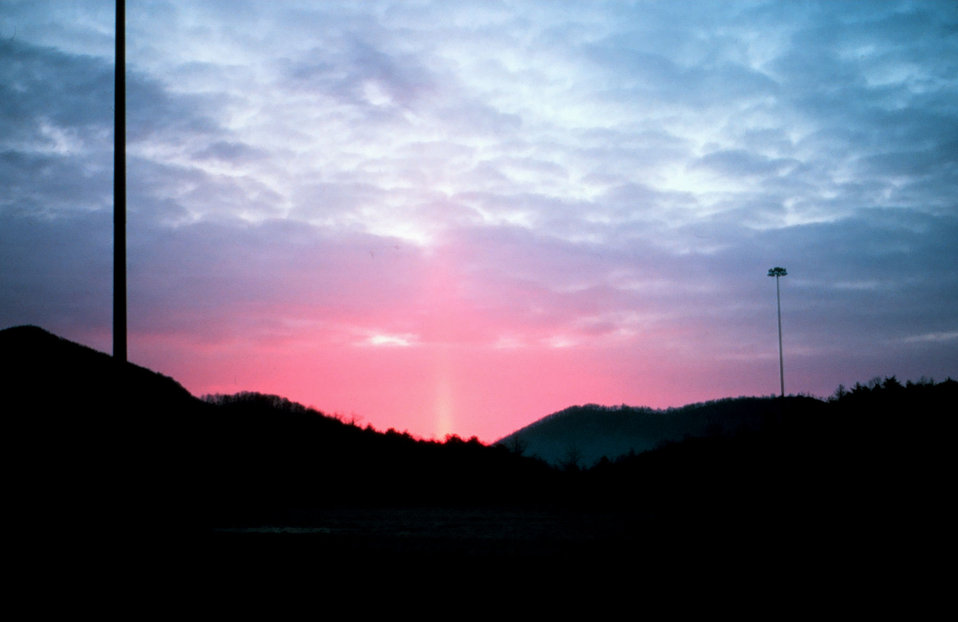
Sun pillar - most cases require ice crystals falling from cloud Falling ice crystals termed virga